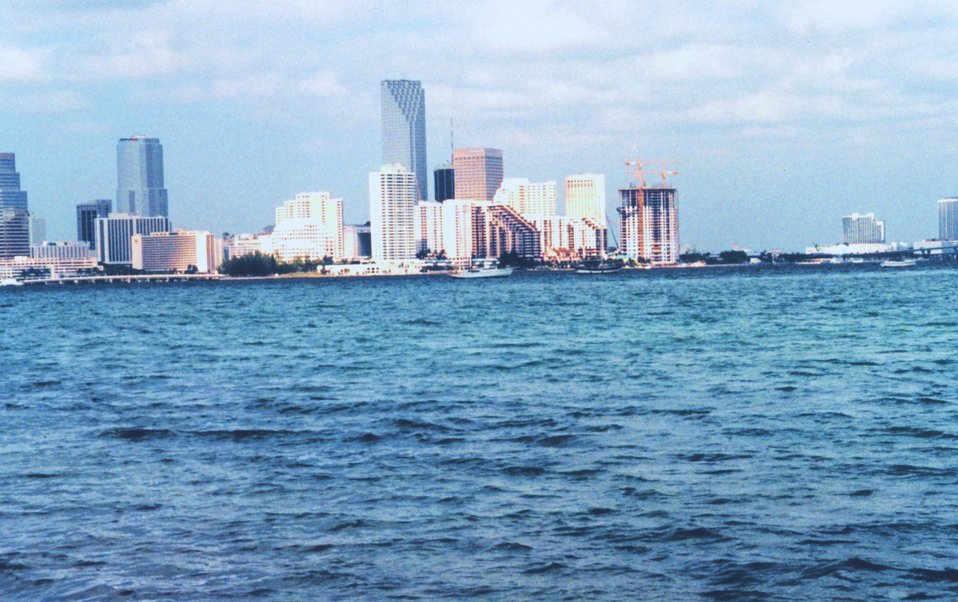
Miami skyline